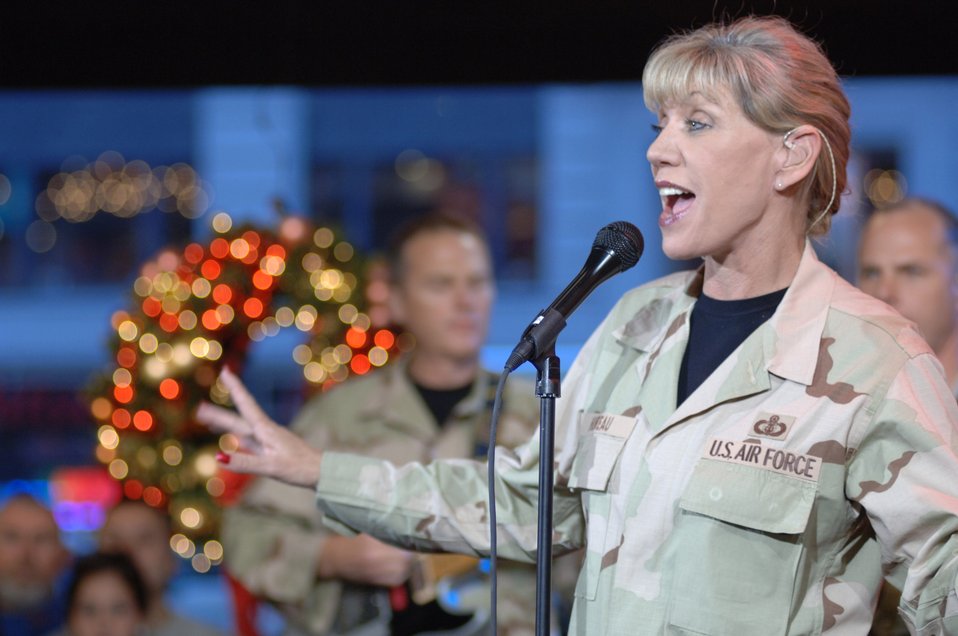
Academy band spreads news in Big Apple

Chief Master Sgt. Marcie Hureau sings with Wild Blue Country on Good Morning America Nov. 24 in New York City. The performance was part of a five-day tour by the U.S. Air Force Academy Band, accompanied by the cadet chorale and falconers, in which it had five national television appearances.